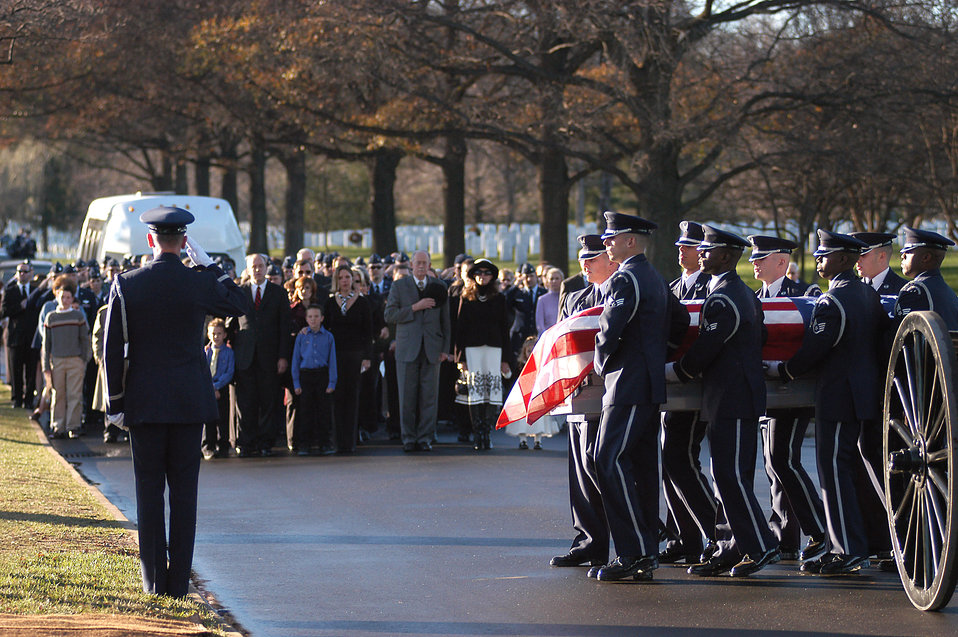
Laid to rest

Air Force Honor Guardsmen transfer the casket carrying Maj. Troy Gilbert from the caisson to the grave site during a full honors funeral Dec. 11 at Arlington National Cemetery. Major Gilbert was the pilot of an Air Force F-16 Fighting Falcon engaged in support of coalition ground combat operations that crashed approximately 20 miles northwest of Baghdad Nov. 27. Major Gilbert was assigned to the 309th Fighter Squadron, Luke Air Force Base, Ariz., and was deployed to the 332nd Expeditionary Wing, Balad Air Base, Iraq.